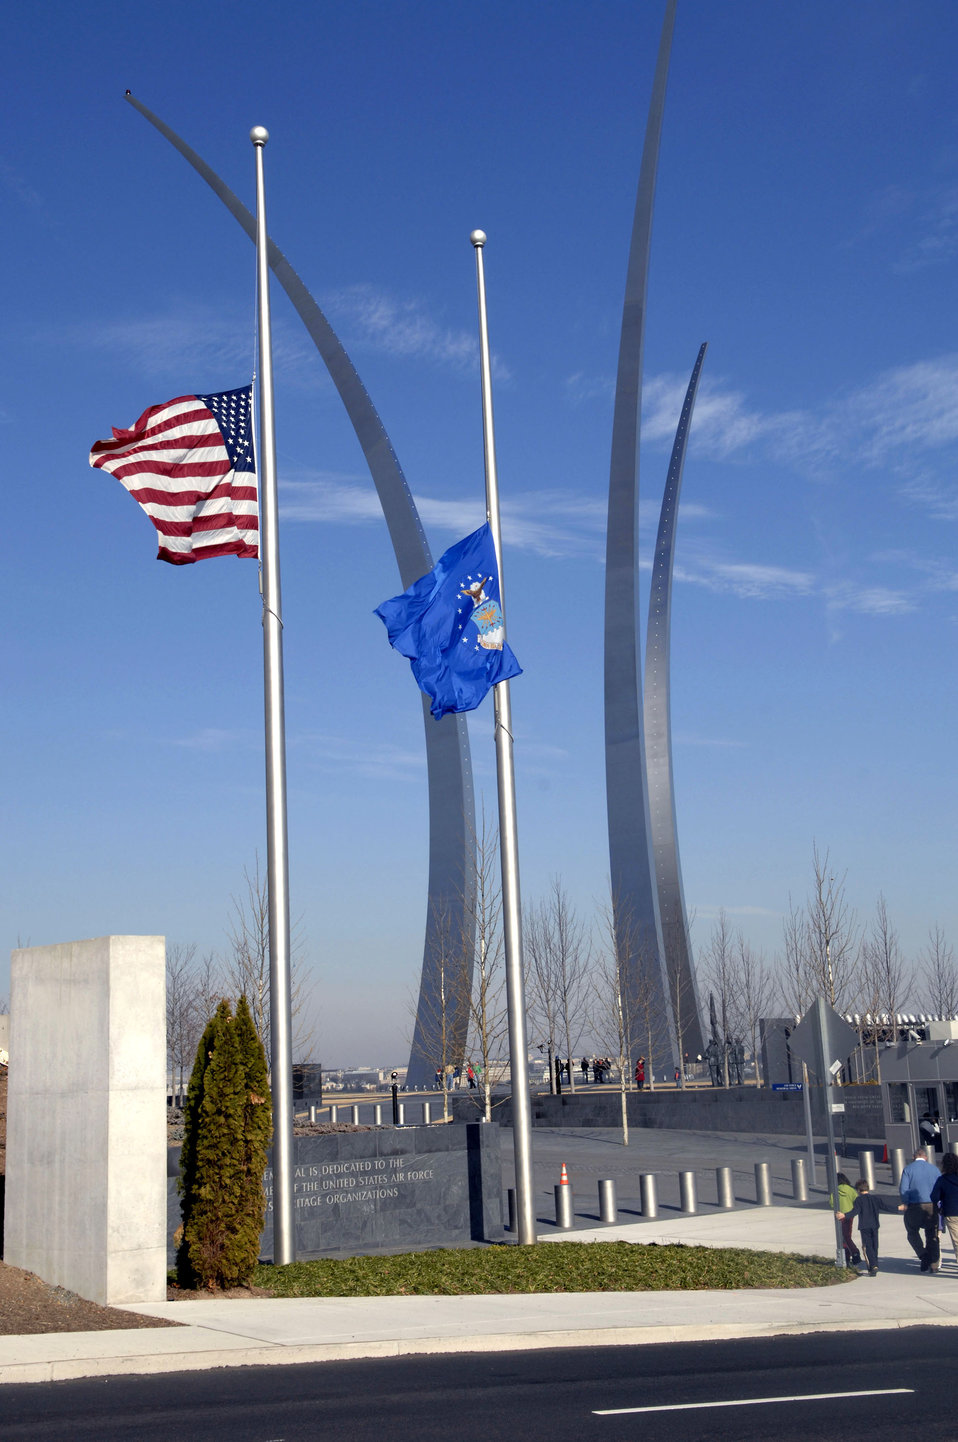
In memory of President Ford

The American flag and the U. S. Air Force flag fly at half staff in front of the Air Force Memorial in Arlington, Va. in honor of President Gerald R. Ford, who passed away Dec. 26 at age 93. During his tenure as president, Ford signed legislation permitting women to enter military academies Oct. 7, 1975. Women first entered the United States Air Force Academy on June 28, 1976. He will be laid to rest Jan. 2 on the grounds of the Gerald R. Ford Presidential Museum in Grand Rapids, Mich., the president's hometown.